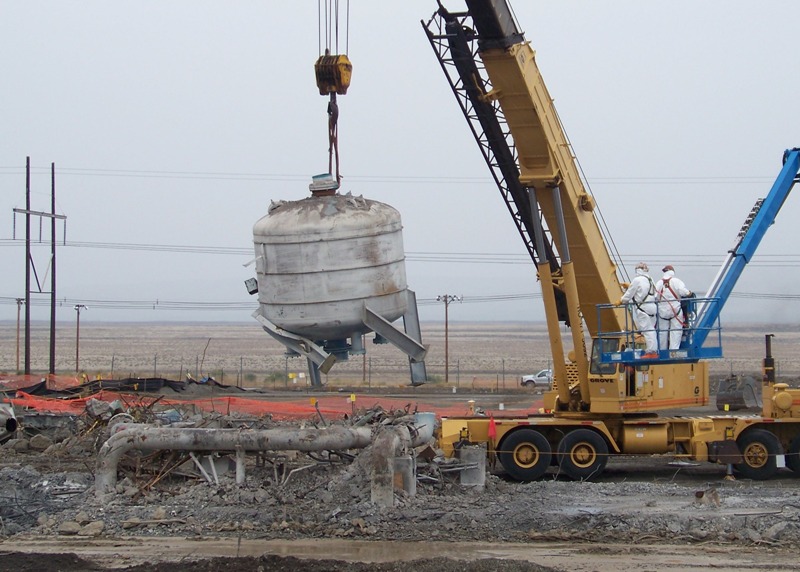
115KE second process tank removed 9-24-10

The second of two large process tanks is hoisted from its former location within the 115KE Gas Recirculation Building that CHPRC is demolishing with Recovery Act funding.